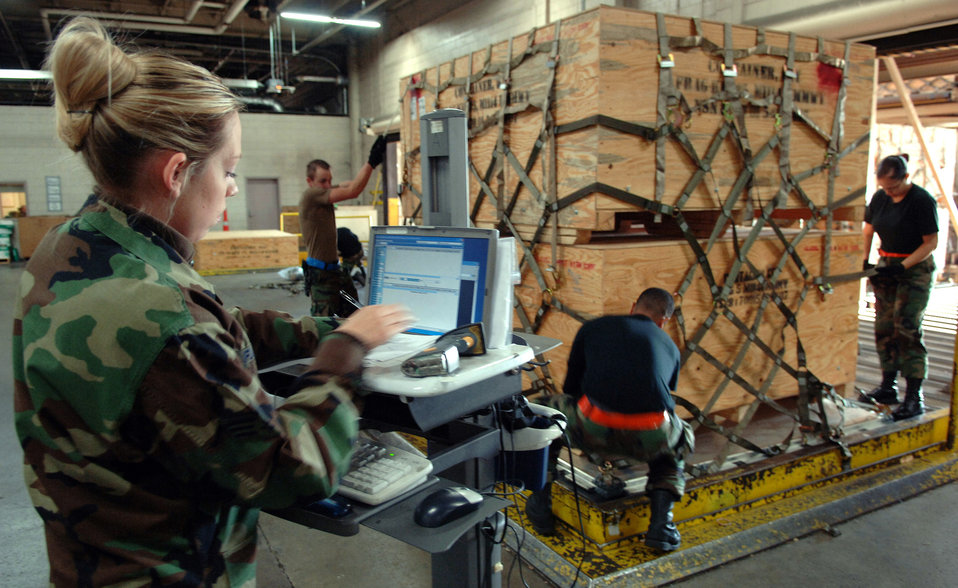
Loading Up

Senior Airman Cecilia Fuller checks the cargo pallet content listing to ensure a pallet is properly labeled while fellow Airmen strap netting down to secure the cargo Oct. 25. Airman Fuller is an air transportation specialist at Charleston Air Force Base, S.C.